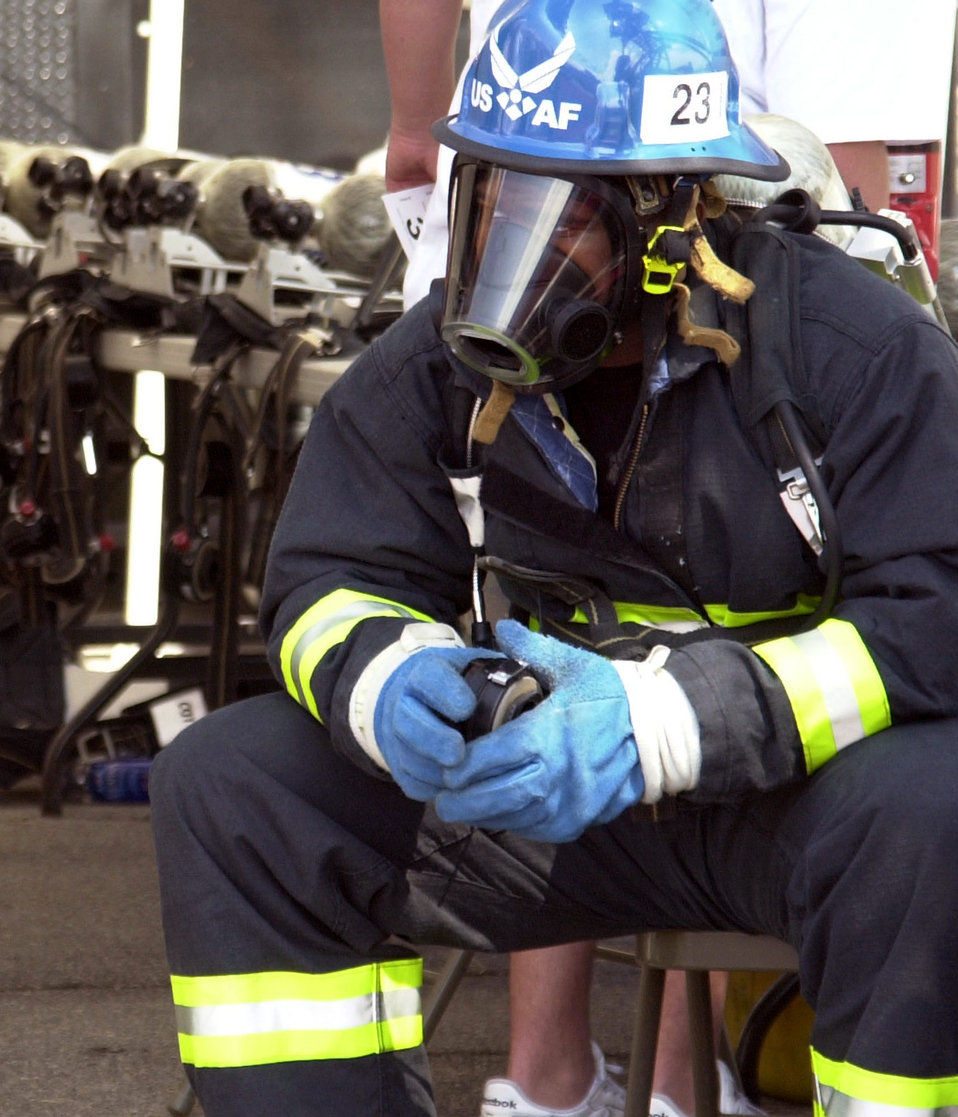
Firefighter combat challenge

EL PASO, Texas -- Senior Airman Frank Abreu, a firefighter from Travis Air Force Base, Calif., contemplates his run of the challenge course at the Scott Firefighter Combat Challenge here Oct. 4.